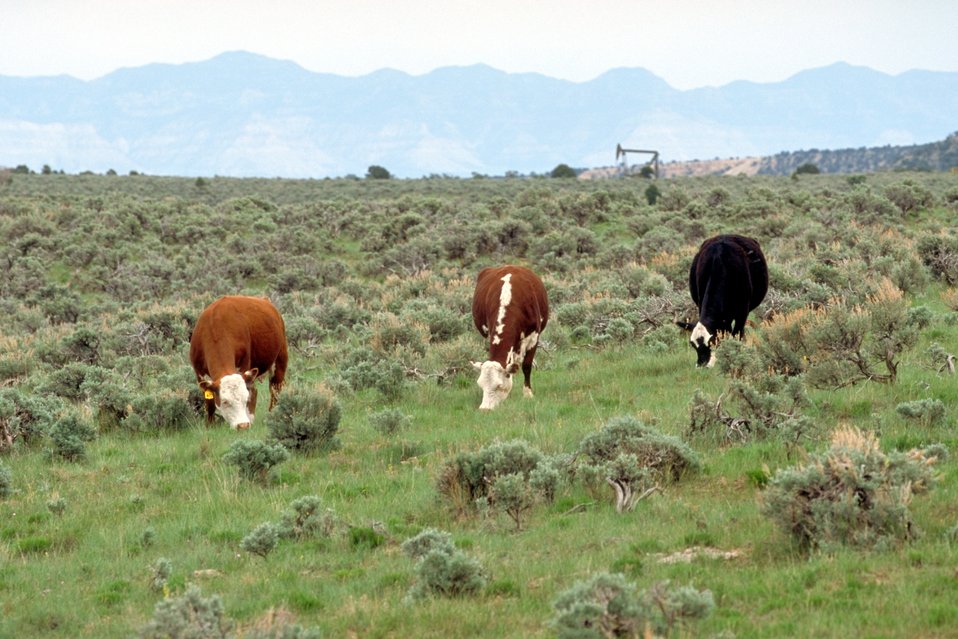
Livestock grazing on BLM lands near Price, Utah.